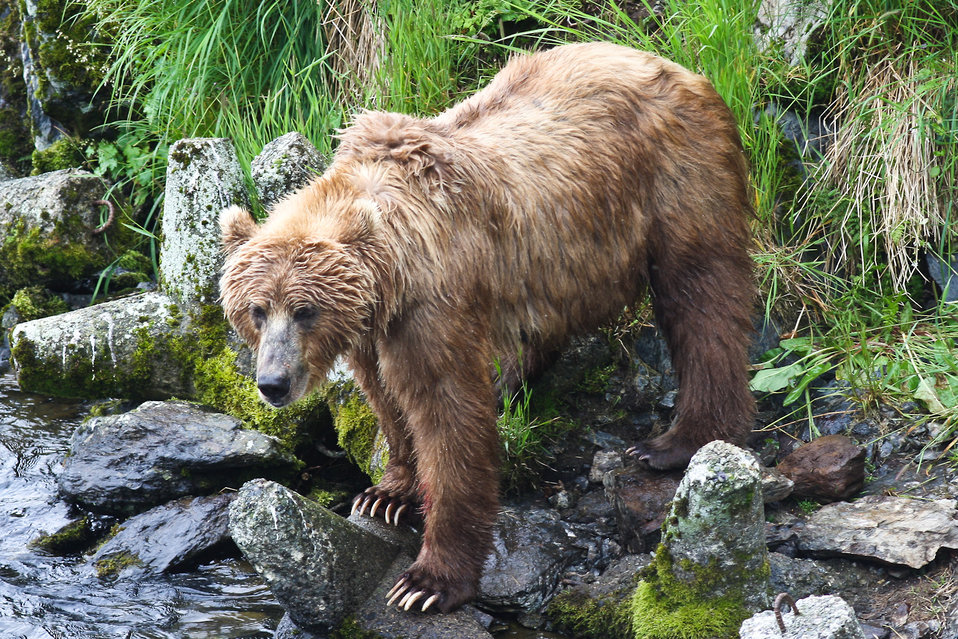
Watching the falls

Kodiak brown bear watching for fish on the Dog Salmon River.
Lisa Hupp/USFWS